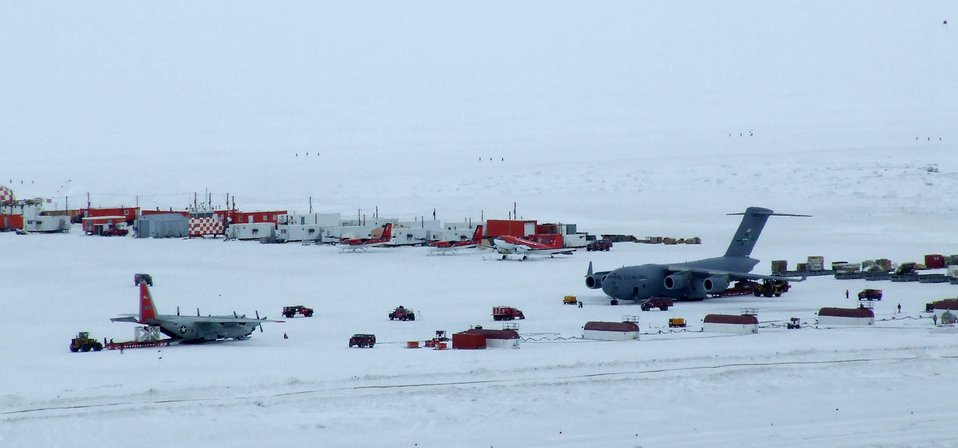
Icy ops

Cargo is transported from a C-17 Globemaster III from McChord Air Force Base, Wash., to an awaiting LC-130 Hercules, operated by the New York Air National Guard, Nov. 16, near McMurdo Station, Antarctica.